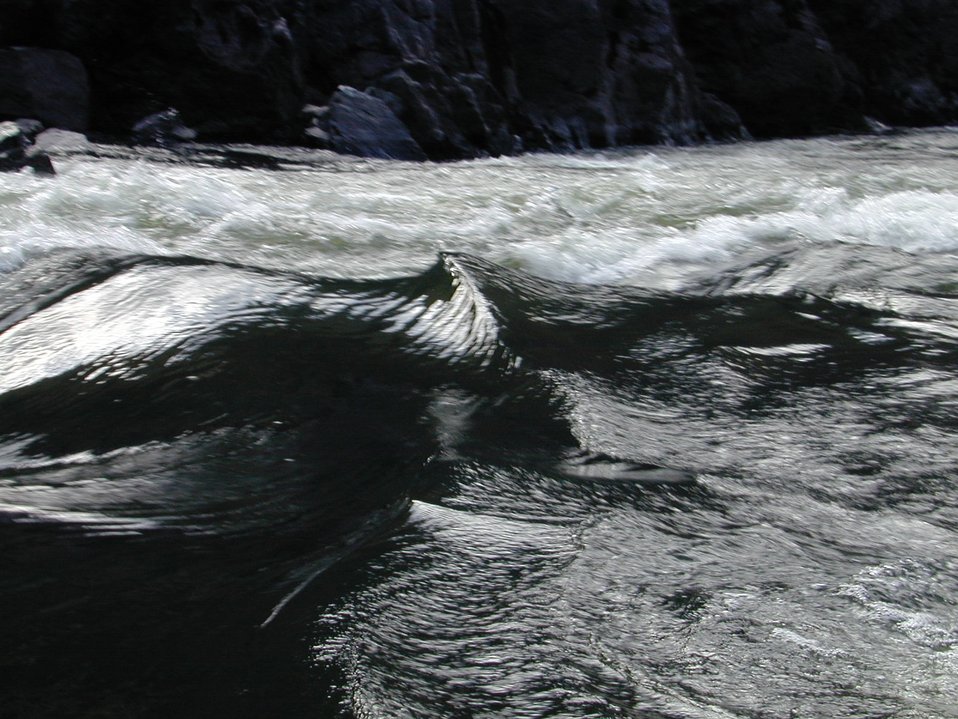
Recreation Rafting on Lower Salmon River Cottonwood Field Office UCSC Upper Columbia Salmon Clearwater District